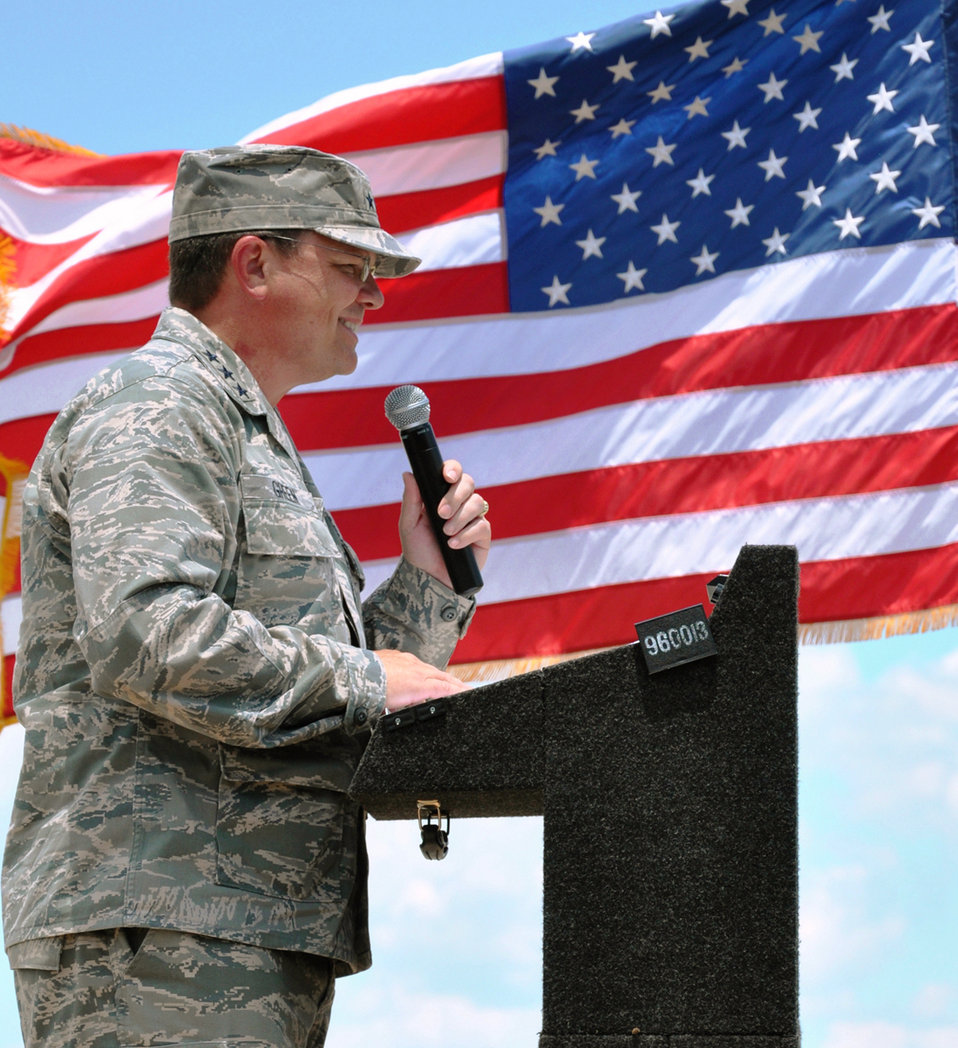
Medical readiness center

Lt. Gen. (Dr.) Charles Green remarks on the grand opening of the $18 million Medical Readiness Training Center June 25, 2010, at Camp Bullis, Texas. General Green is the Air Force Surgeon General.